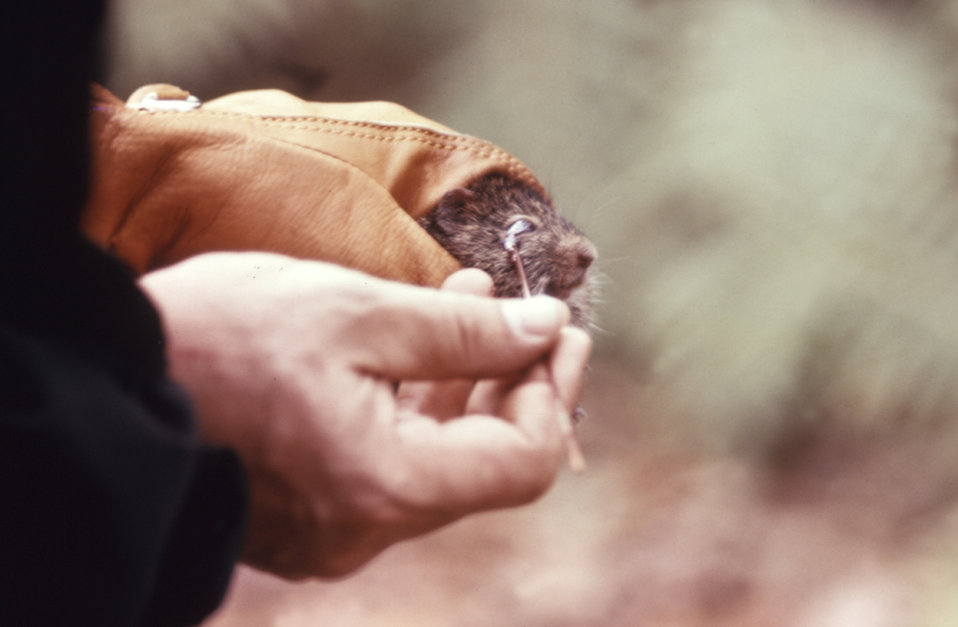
This clinician is extracting blood via an ocular stick from an anesthetized rodent to be used during a 1974 arbovirus study.